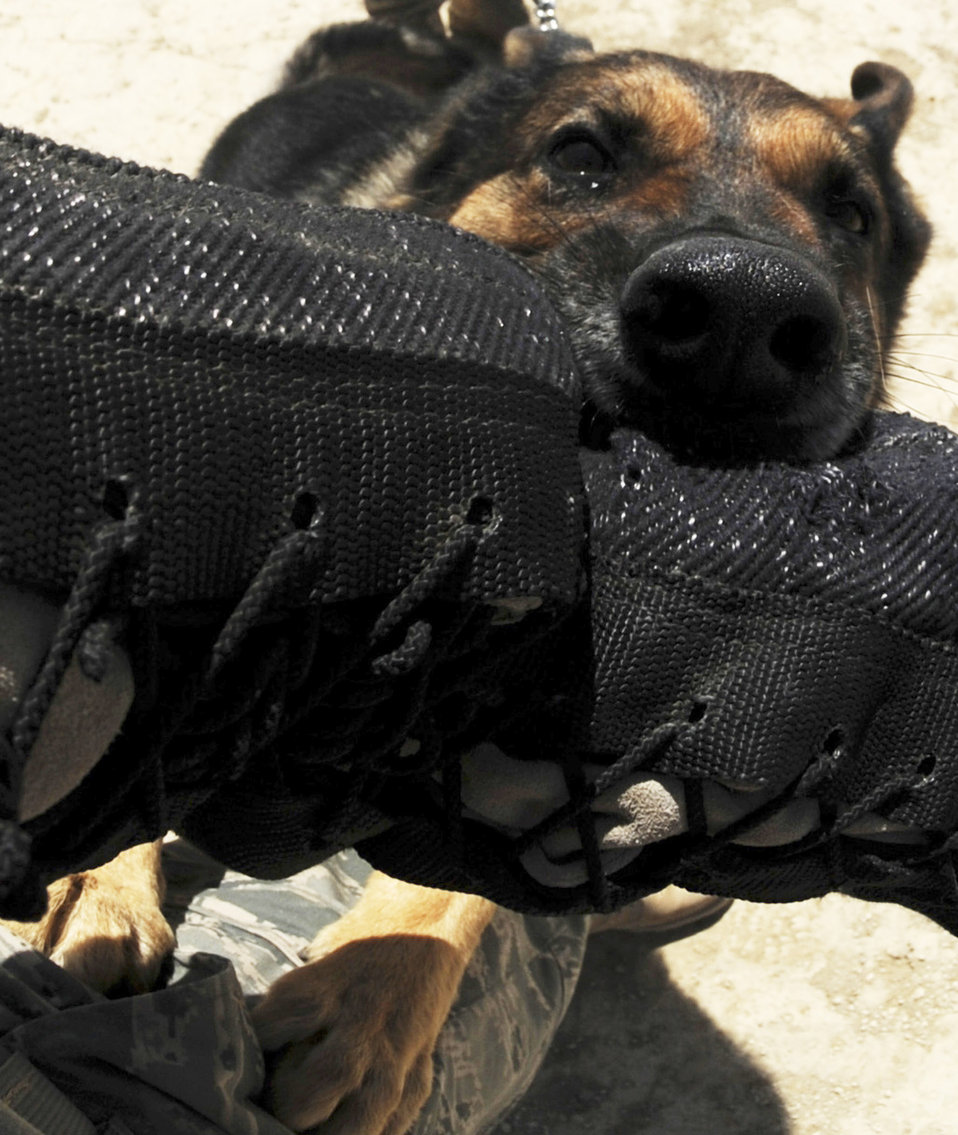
Take a bite

Military working dog Baiky gnaws on a training sleeve Aug. 7 at Bagram Airfield, Afghanistan. He and his handler Staff Sgt. Chris Reynolds patrol the base and inspect mail, luggage, and vehicles for narcotics. They are deployed from Vandenberg Air Force Base, Calif.